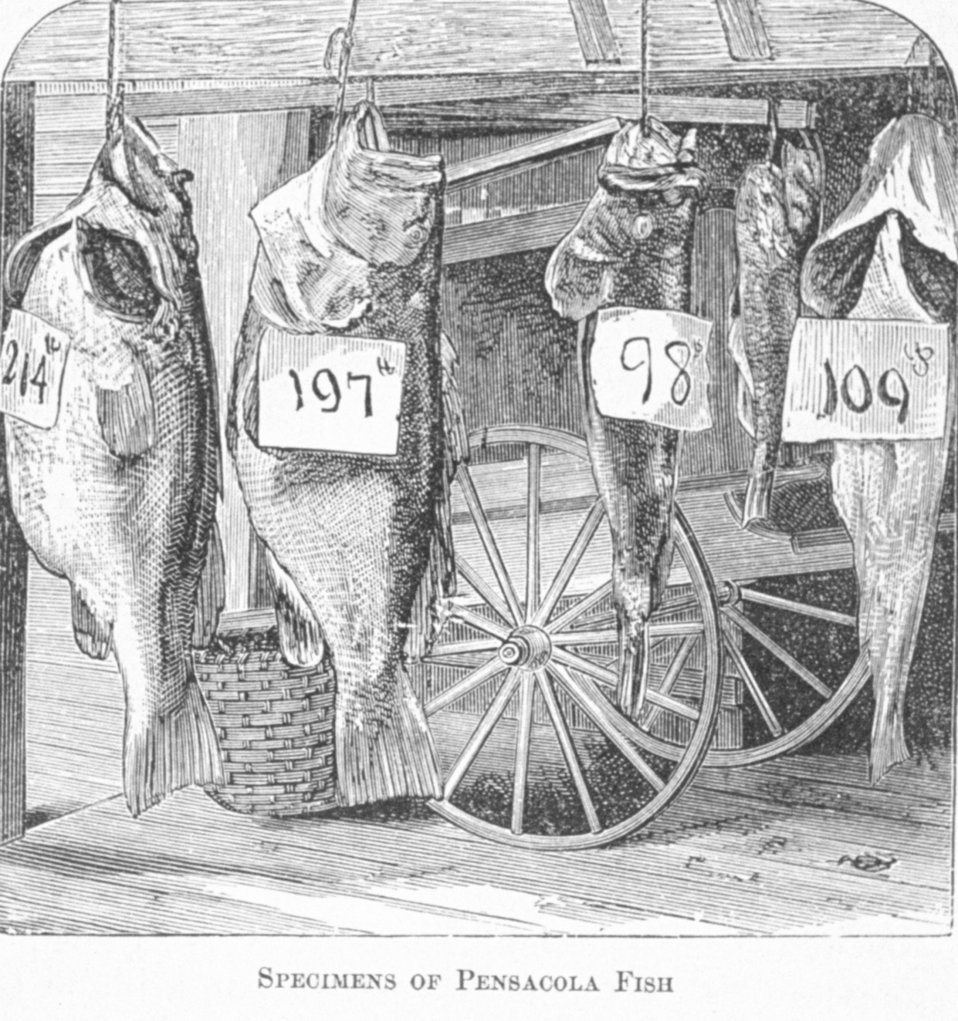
Specimens of Pensacola Fish - in 'Florida for Tourists, Invalids, and Settlers' by George M. Barbour, 1881. Library Call No. F316 .B23 1881. Library Call No. F316 .B23 1881.